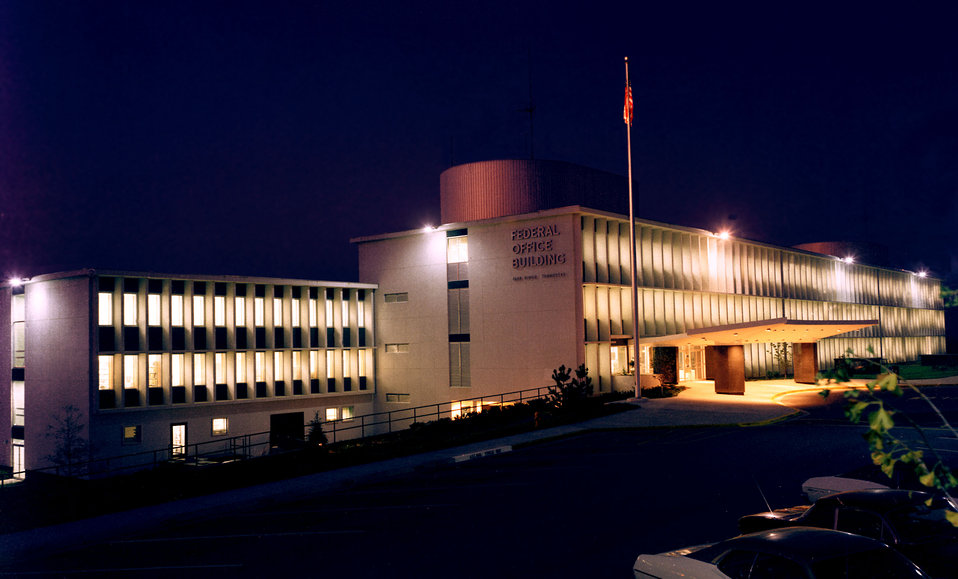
Oak Ridge Federal Office Building Oak Ridge

71-255 DOE photo by Frank Hoffman Oak Ridge Federal Office Building Oak Ridge Tennessee 10-28-1971